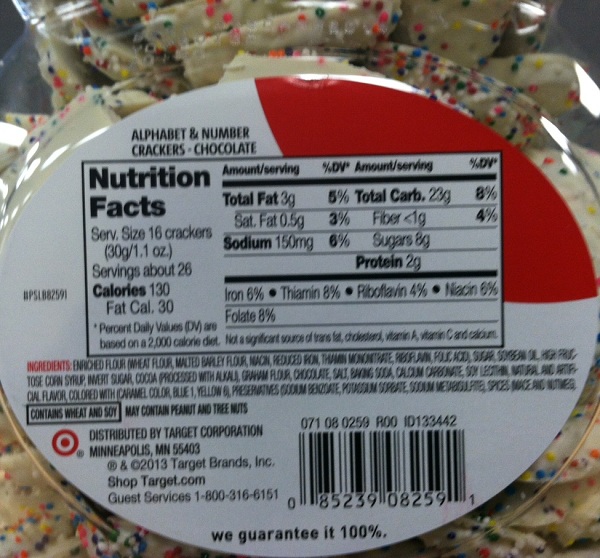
RECALLED – D.F. Stauffer Biscuit Co., Inc. Animal Cookies

October 4, 2013 – Product Recall – D.F. Stauffer Biscuit Co., Inc. Issues Allergy Alert and Voluntary Recall on 44 oz. Market Pantry White Fudge Coated Animal Cookies Due to Mislabeling and Undeclared Allergens.